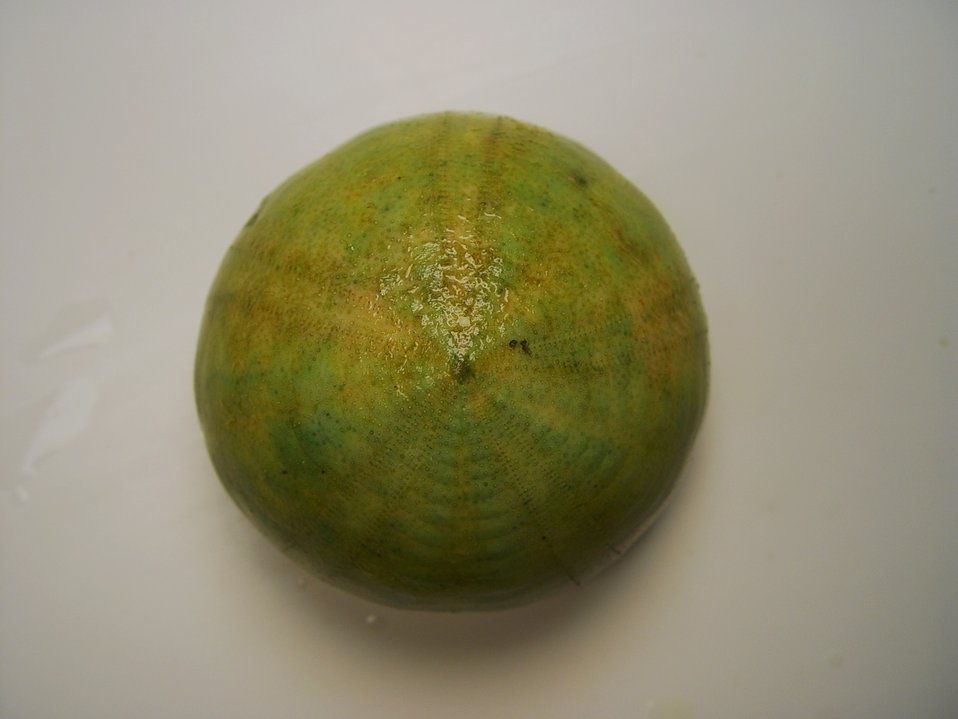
An echinoderm (Conolampas sigsbei )